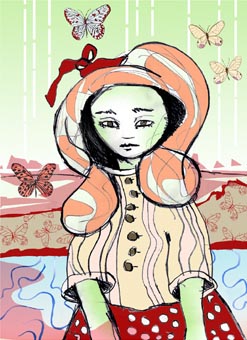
Daniel Halsall was born in 1981 in Merseyside, England. He is a painter and printmaker. His art typically uses bright colours and depicts impish characters and nature in its most fascinating form. Daniel’s influences include Japanese Prints, Buddhist artwork and painters Henri Matisse, Pablo Picasso and Will Barras. His earliest influence was Picasso. He studied BA Fashion Photography at the London College Of Fashion, developed skills in new software and digital equipment and graduated in 2004. Daniel has recently completed a series of digital prints entitled “The Muki Paws Series.”